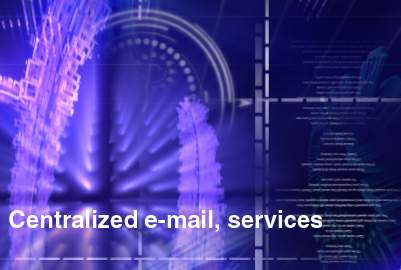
Air Force Network Operations begins migration to centralized e-mail, network services

The Air Force Chief of Staff Gen. Norton Schwartz signed a directive memorandum here recently granting the Air Force Network Operations commander centralized order-issue authority over the operation, defense, maintenance and control of Air Force networks.